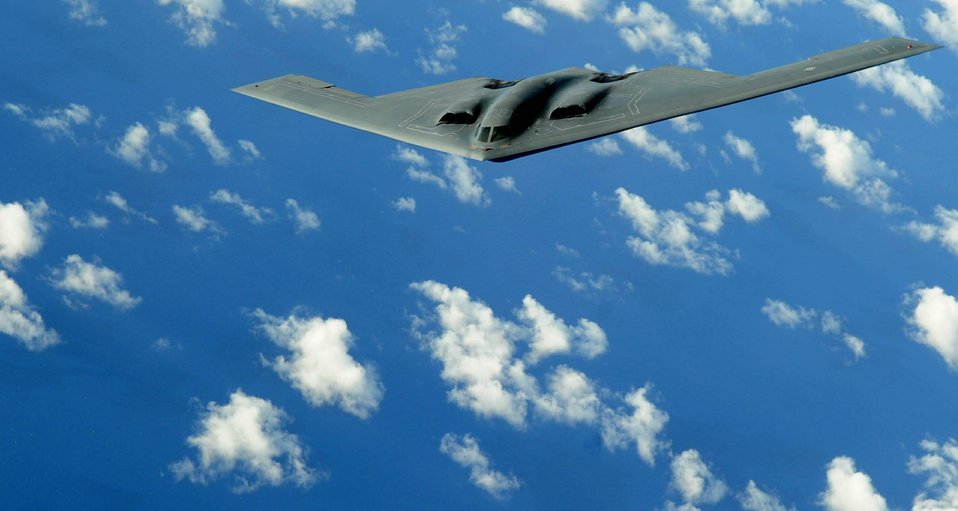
Whiteman Airmen prepare to re-deploy back home

A B-2 Spirit deployed to Andersen Air Force Base, Guam, flies a training mission over the Pacific in support of the continuous bomber presence. This bomber was one of four aircraft to complete 700 flying hours during the three-month deployment from Whiteman Air Force Base, Mo.